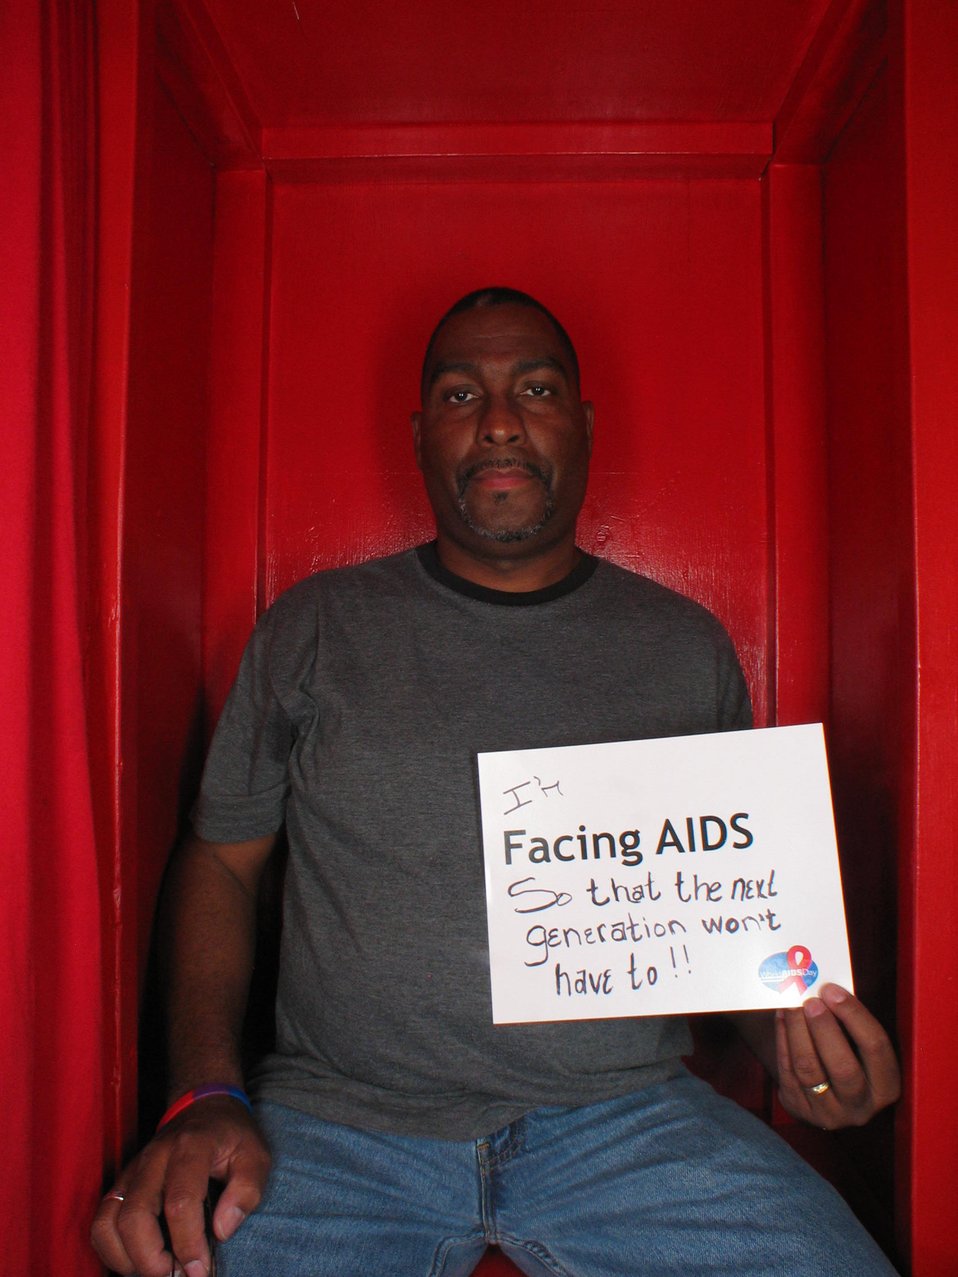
I'm Facing AIDS so that the next generation won't have to!!